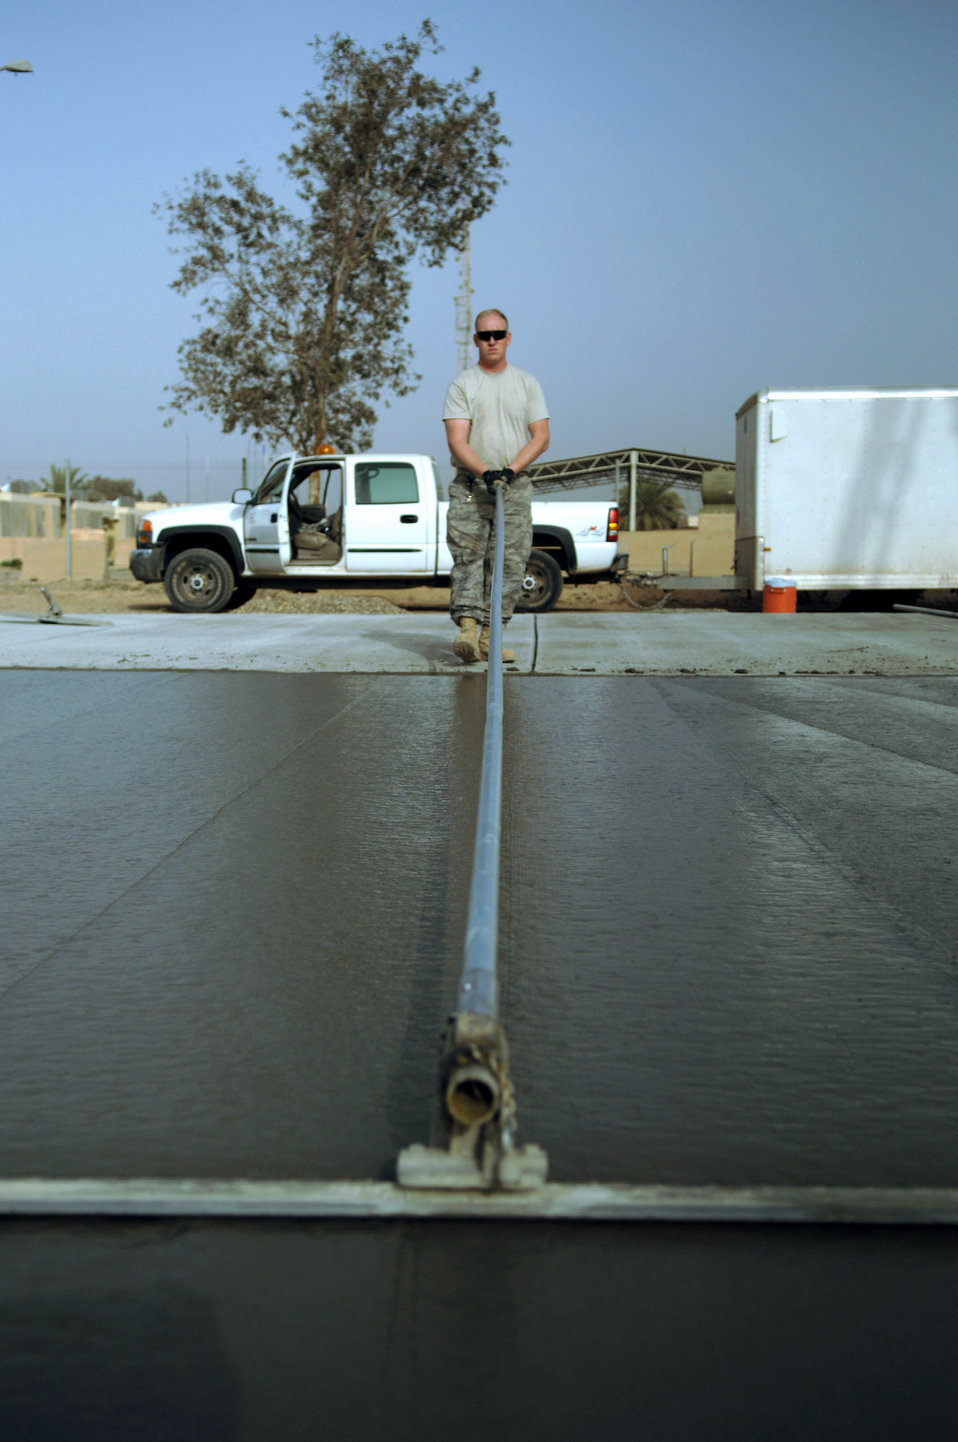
Set in stone

Tech. Sgt. Bryan Crane uses a cement-finishing tool called a bull float to even out the surface of a concrete pad Feb. 15 during a construction project at Joint Base Balad, Iraq. Sergeant Crane, a pavement and construction equipment operator with the 332nd Expeditionary Civil Engineer Squadron, helped complete a 76-meter concrete pad. He is deployed from Grand Forks Air Force Base, N.D.